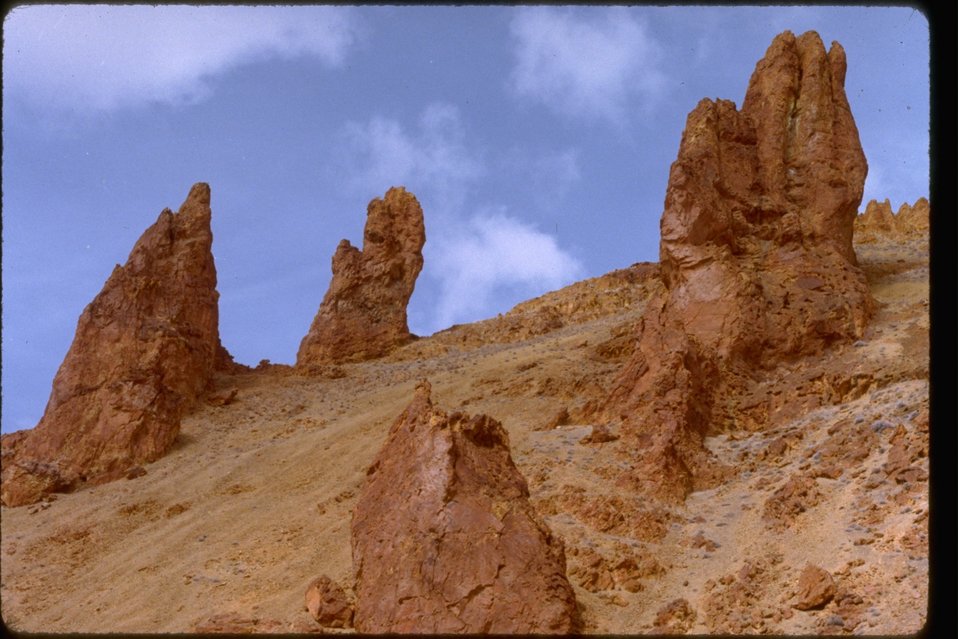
Pinnicles in School House" in the Slocum Creek Wilderness Study Area. WSA OR 3-75.